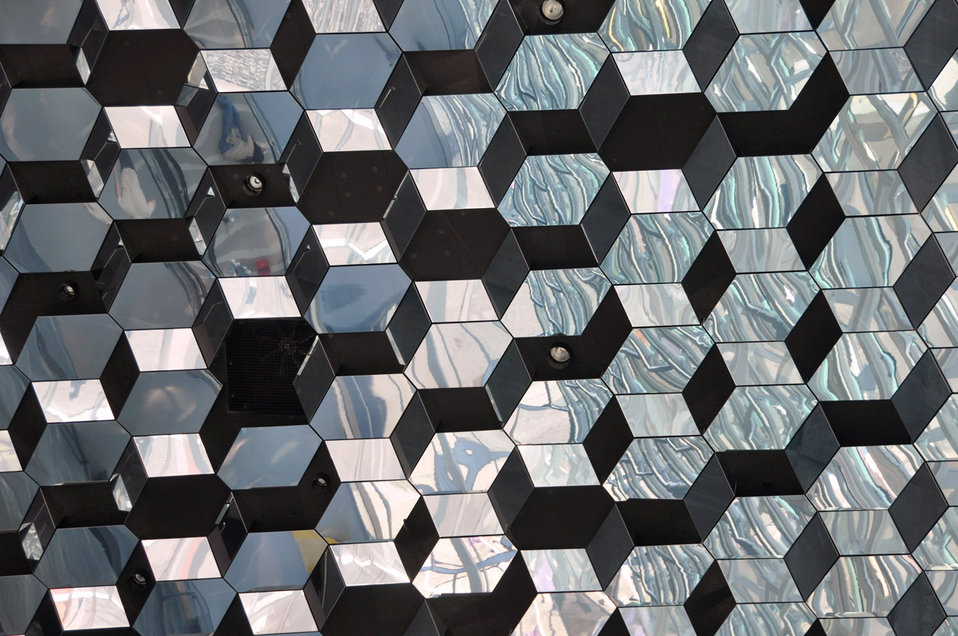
Opera 2

Opera house in reykjavik seen from the center.